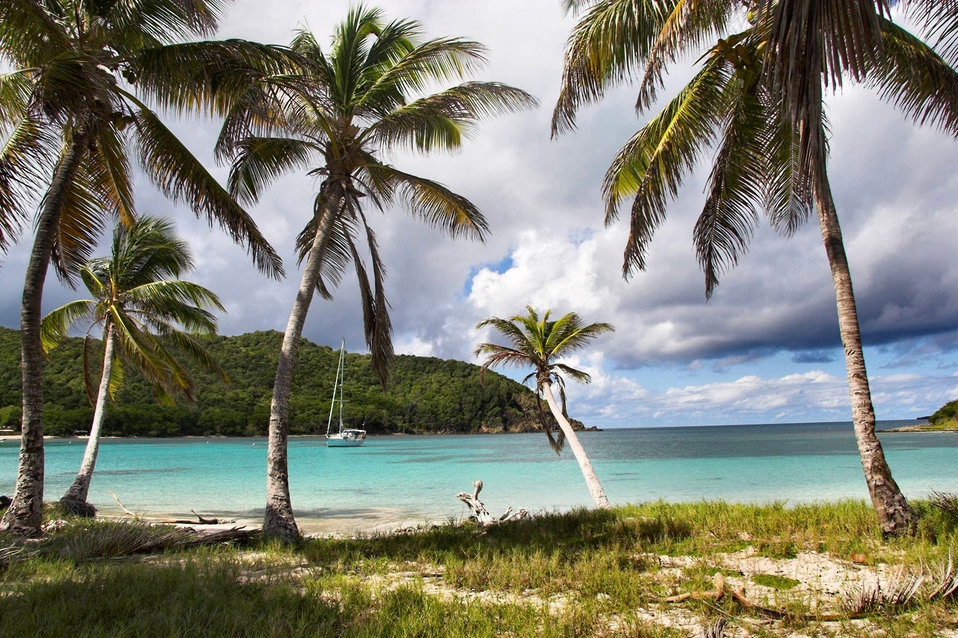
Saltwhistle bay, mayreau

Saltwhistle bay mayreau, grenadines.